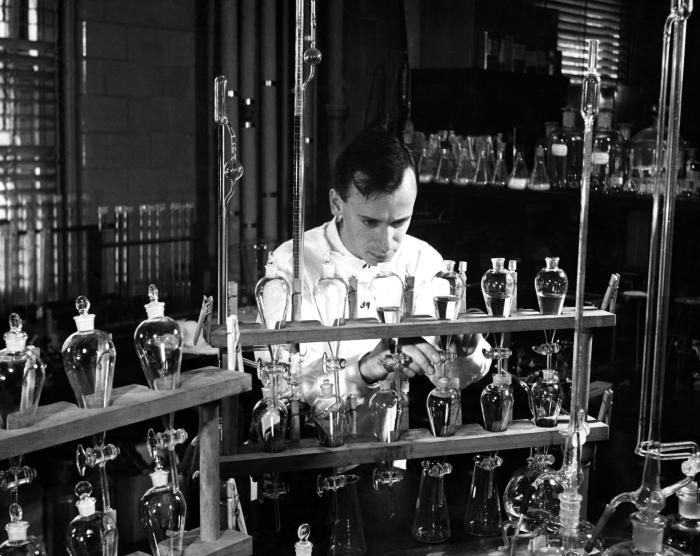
This November, 1943 photograph was provided by the Center for Disease Control's (CDC), National Institute for Occupational Safety and Health (NIOSH). The image depicted an industrial chemist in the process of analyzing a solution in order to determine its lead and zinc content using the chelating agent, dithizone (diphenyl-thiocarbazone). Though it cannot be determined from this image, as to the toxicity of any liberated fumes, this scientist was using no protective breathing accessories, goggles, or gloves, even though, as can be seen in PHIL 9753, he was pipetting liquids using his mouth, while simultaneously handling the glass beaker stoppers with his bare hands.